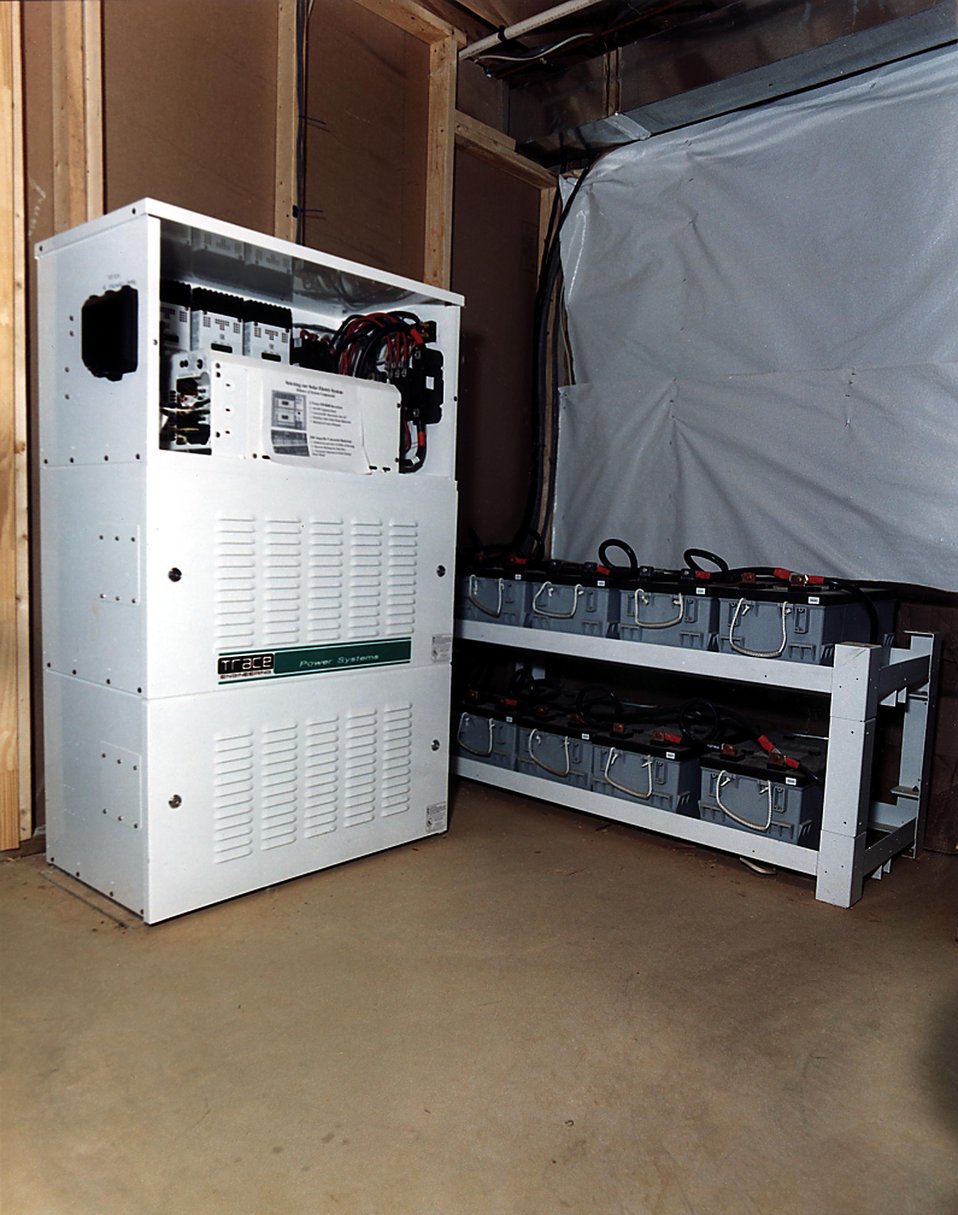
BATTERIES IN THE UTILITY ROOM OF THE ZERO ENERGY HOUSE IN LOUDOUN COUNTY, VIRGINIA.

A BANK OF BATTERIES, FULLY CHARGED FROM THE SOLAR PANELS ON THE ROOF STANDS READY. WHEN BATTERIES ARE FULLY CHARGED AND THE HOUSE HAS NO MORE ENERGY NEEDS, EXCESS CURRENT FROM THE SOLAR PANELS IS RETURNED TO THE GRID, MAKING THE METER RUN BACKWARDS, CREDITING THE HOME OWNER. AT NIGHT THE HOUSE USES THE TOWNSHIP POWER LINES AND THE METER RUNS FORWARD.